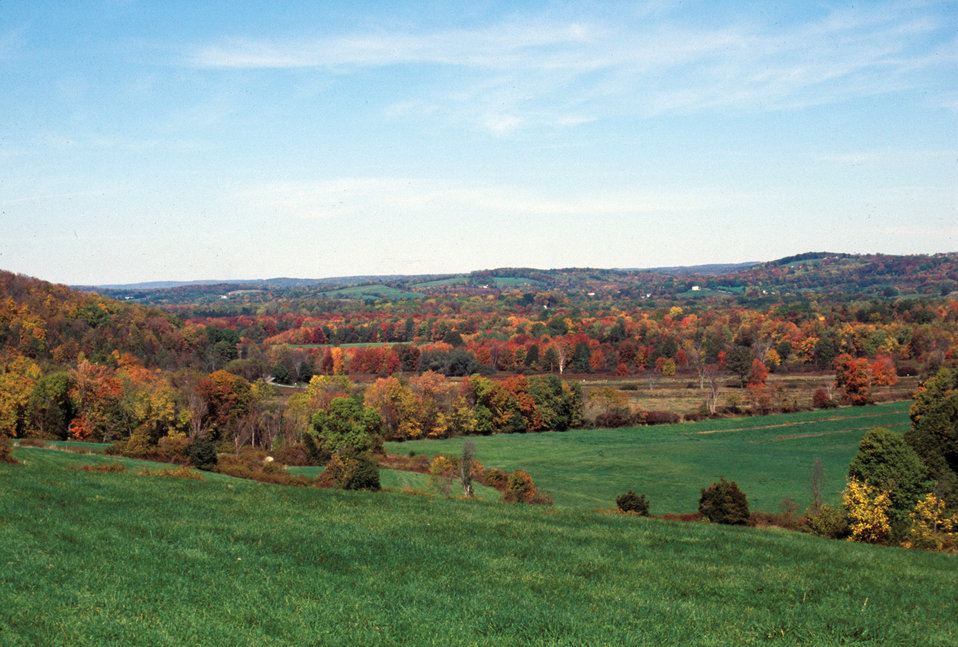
Photo of the Week - Hillside in fall at Wallkill River National Wildlife Refuge, NJ

Fall foliage at Wallkill River National Wildlife Refuge, Sussex, New Jersey.